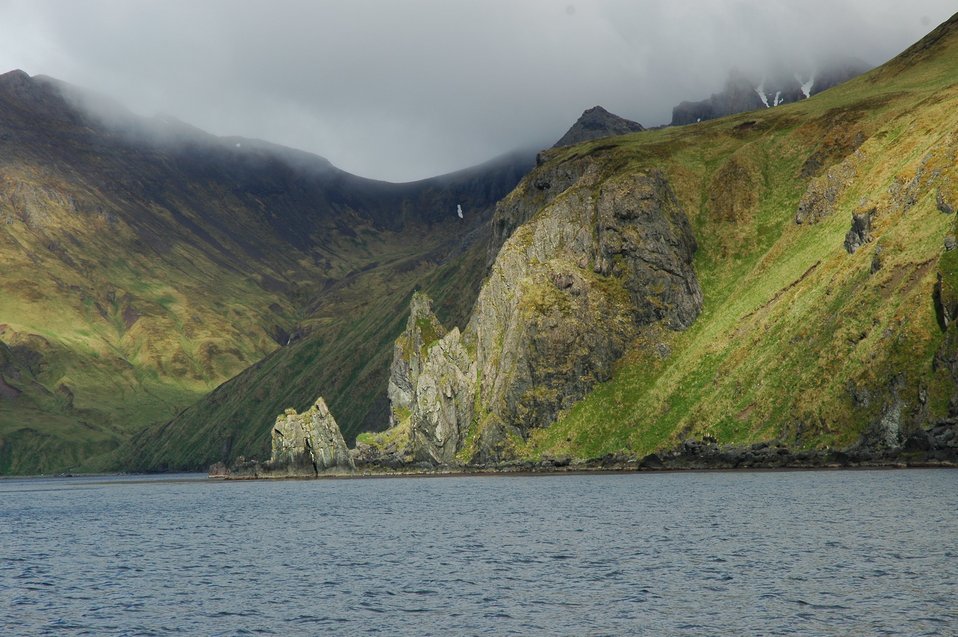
A rugged portion of the coast of Unalaska Island